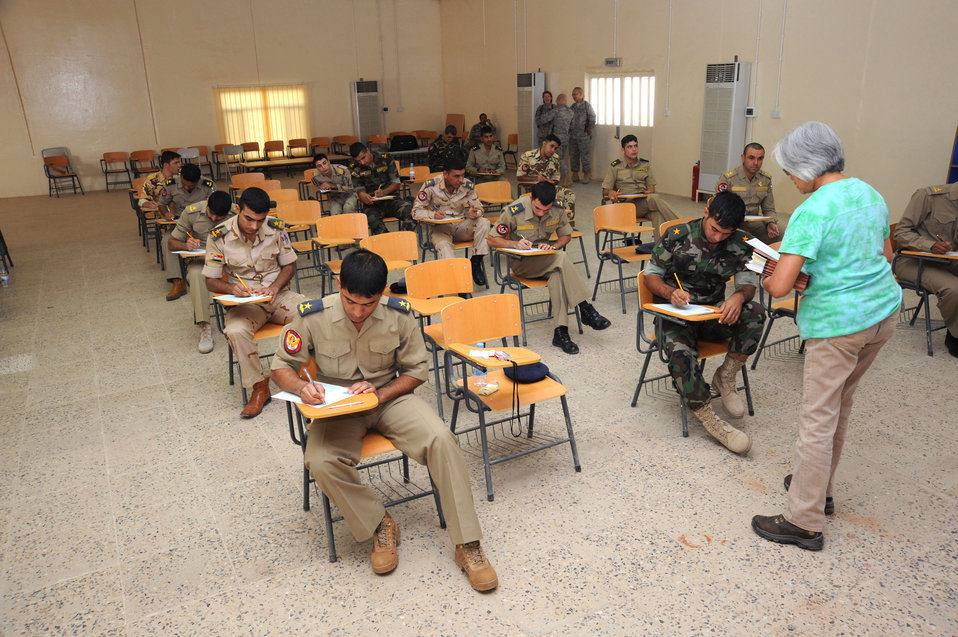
Airmen help future Iraqi pilots learn to speak English

Iraqi air force officers prepare to begin their monthly English evaluation as an instructor from the 821st Expeditionary Training Squadron gives directions Oct. 4, 2009, at Camp Taji, Iraq. Learning English is one of the Iraqi air force's core values and students must successfully complete the course before moving on to pilot training. U.S. Air Force instructors assigned to the 821st ETS facilitate the courses and serve as advisers to their Iraqi counterparts.